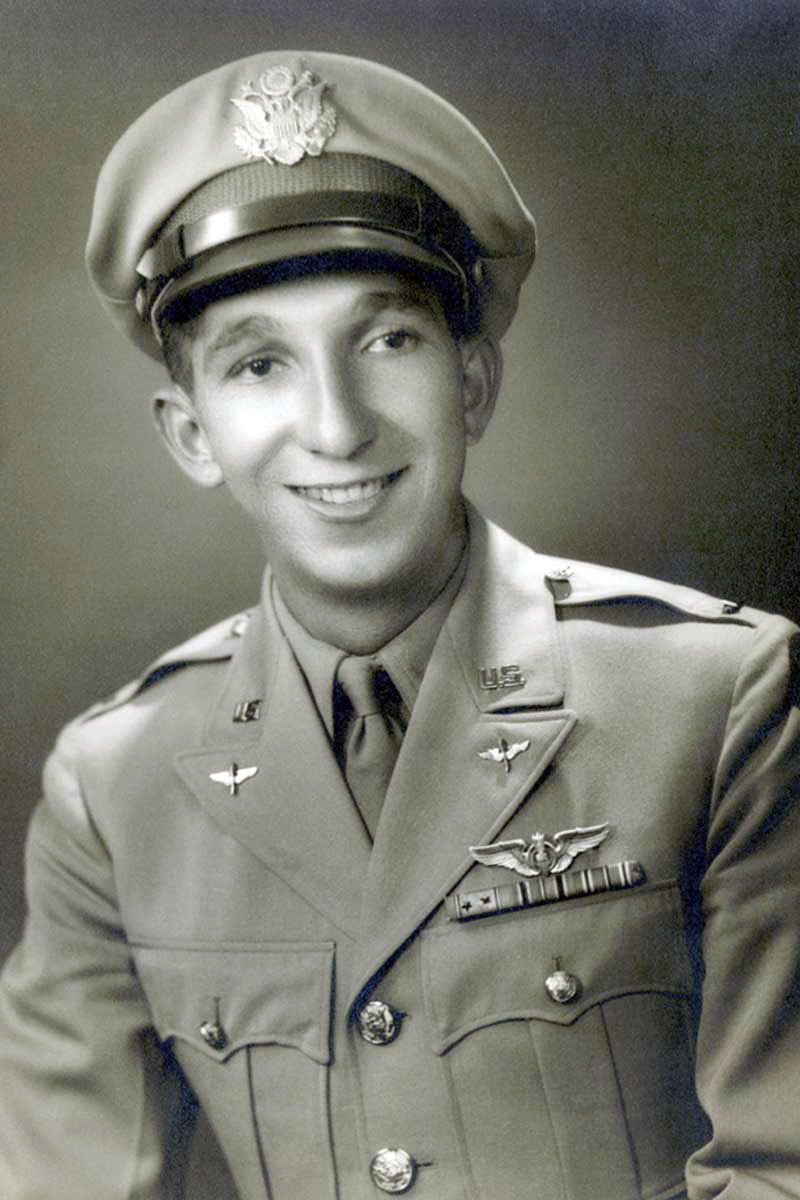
Purple heart

First Lt. Leo Bach when he was a 381st Bomb Group aircrew member in World War II.